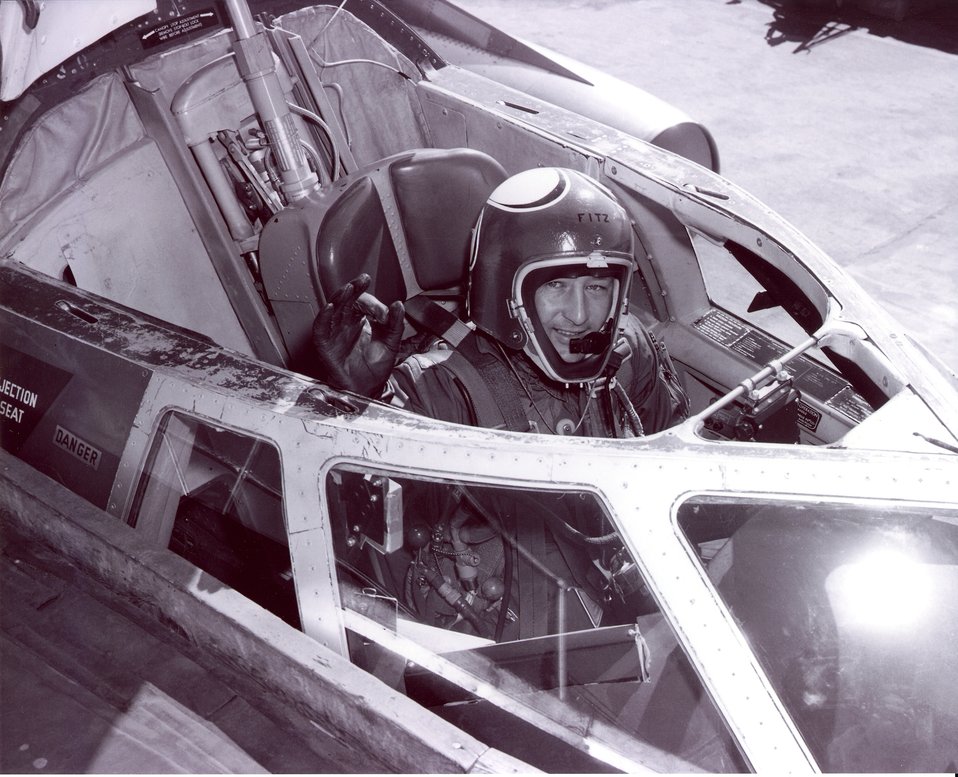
Maj. Fitzhugh